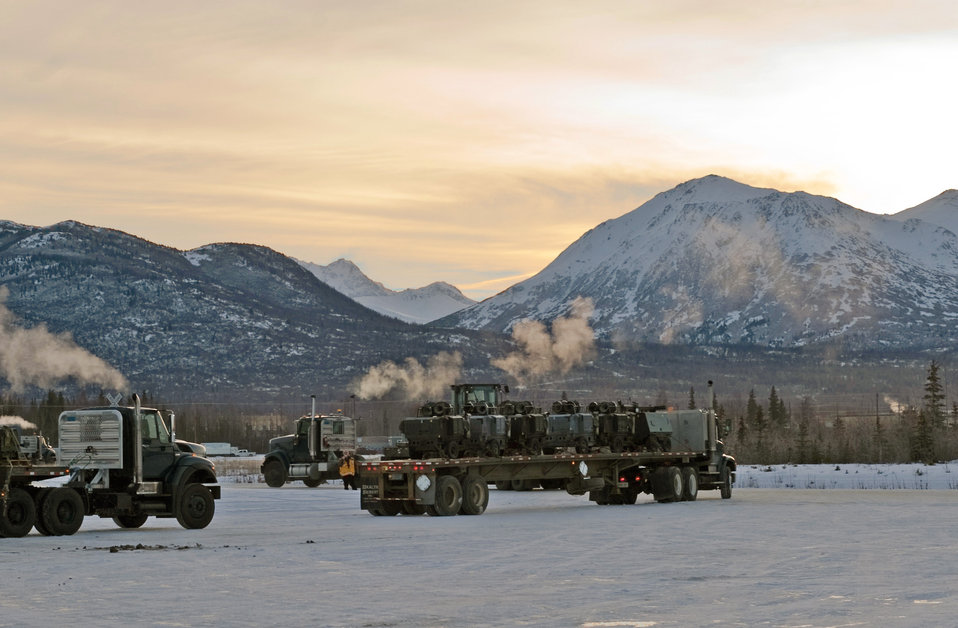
Alaska joint force officials continue search for F-22 Raptor pilot

Members of the Army, Air Force, Alaska National Guard along with several other state assets, delivered materials Nov. 18, 2010, at Joint Base Elmendorf-Richardson, Alaska. The effort was in support of the rescue mission for a JB Elmendorf F-22 Raptor pilot. The crash site is approximately 100 miles north of Anchorage.